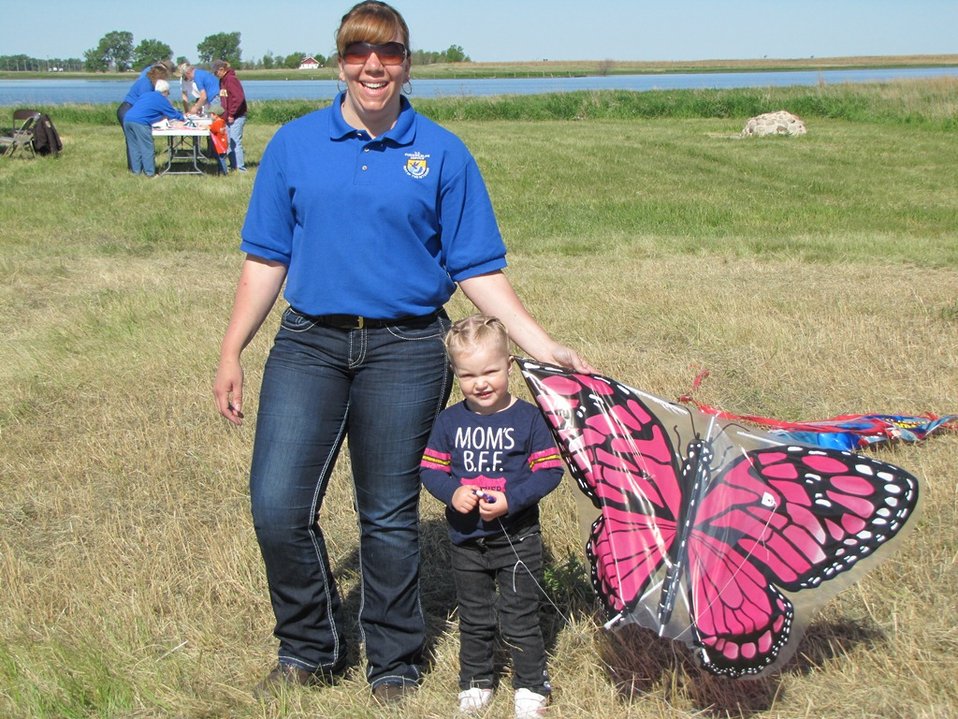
Kites in Flight 2012

USFWS staff helped this kiddo build a kite; finished product.